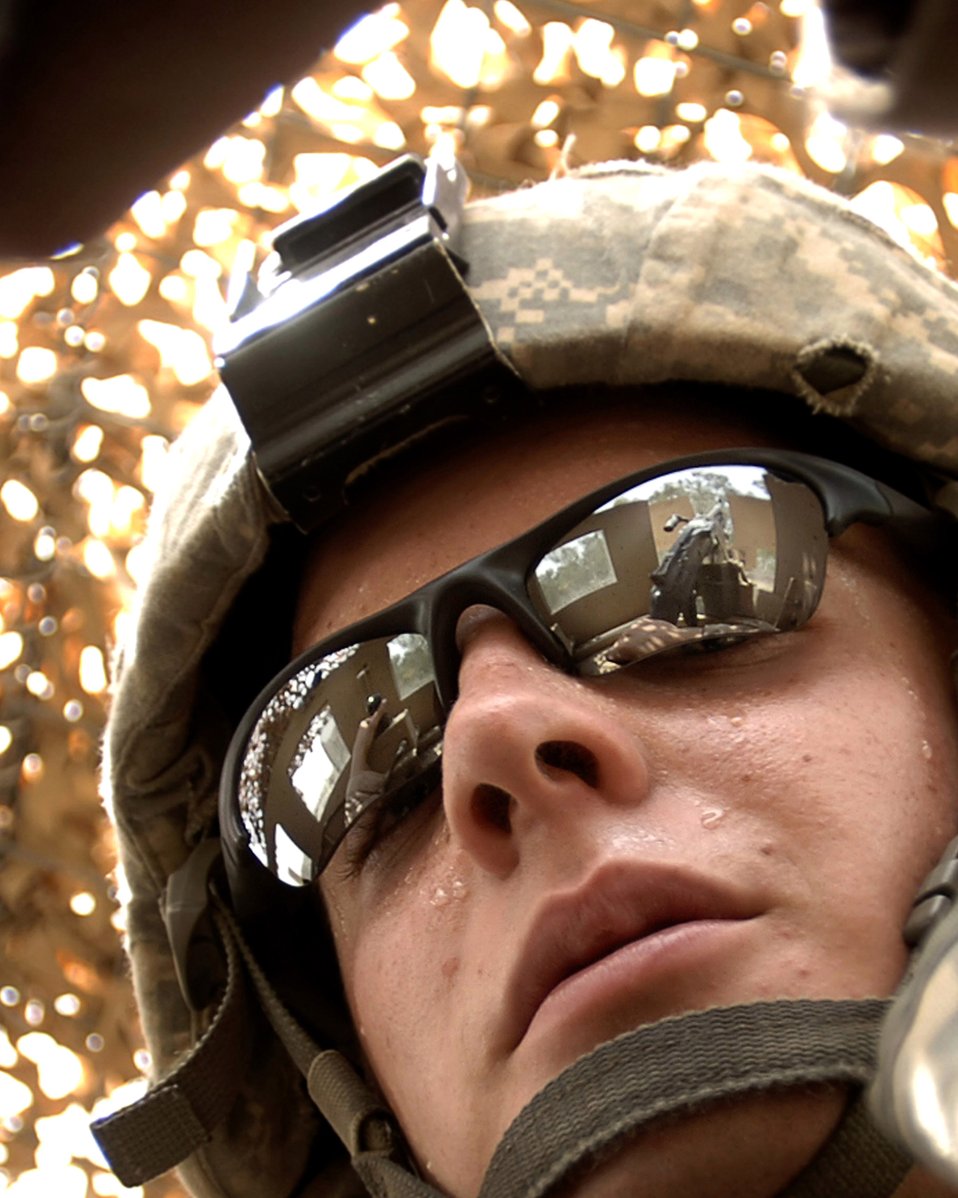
Dangerous road to progress

Senior Airman Ian Ramirez performs turret duty in 108-degree heat on an up-armored Humvee as part of a four-vehicle convoy to Iraqi police stations May 9 in Baghdad, Iraq. Members of Det. 3, 732nd Expeditionary Security Forces Squadron, perform as police transition teams mentoring, coaching and teaching Iraqi police.